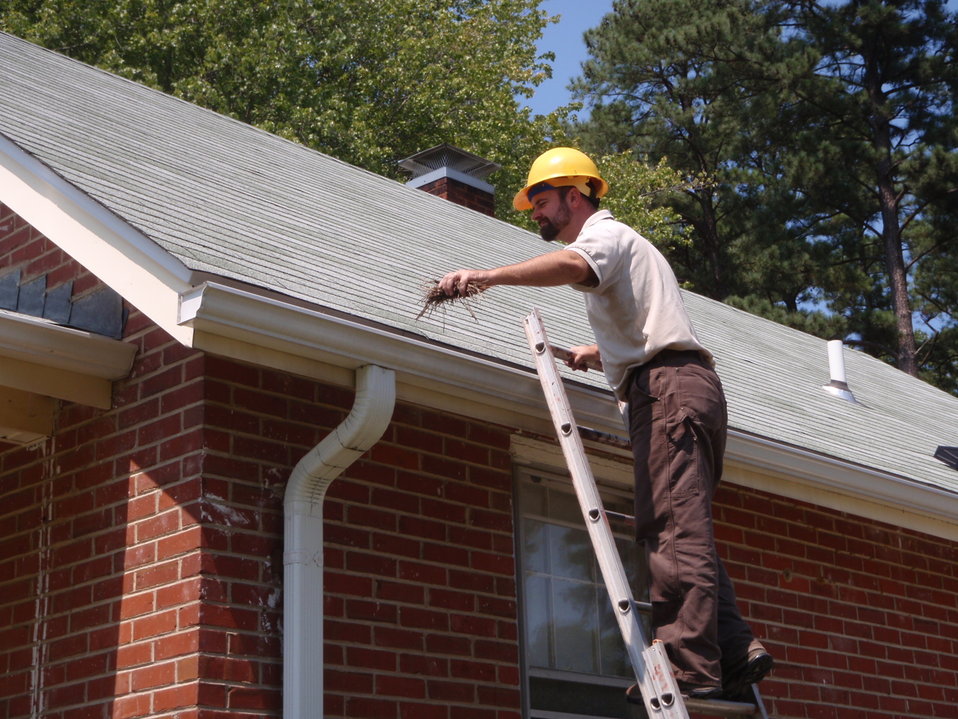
Cyrus Brame cleaning gutters

Harrison Lake National Fish Hatchery employee, Cyrus Brame, prepares for Hurricane Irene in Virginia.